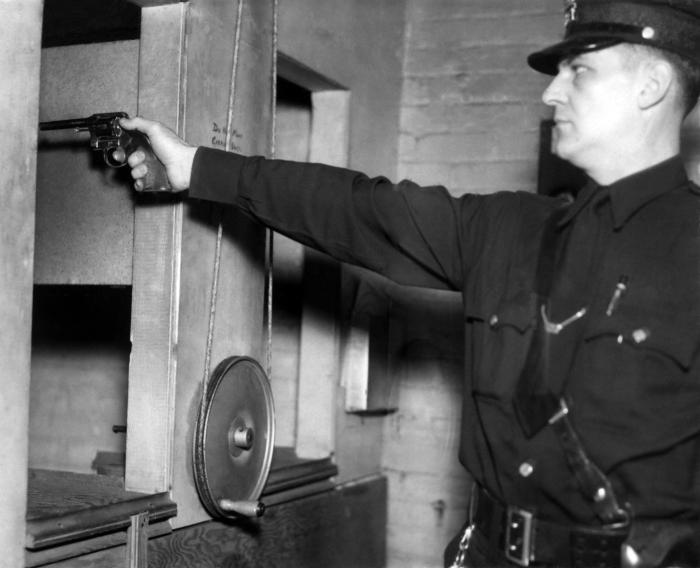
This historical photograph was provided by the Center for Disease Control's (CDC), National Institute for Occupational Safety and Health (NIOSH). The image depicted a policeman who was firing lead bullets inside an indoor firing range. In this situation, the officer was exposed to lead dust from the bullets and shell casings due to the enclosed nature of the environment. This photograph appeared in the December, 1951, issue of 'Industrial Health Monthly'.Workers can be exposed to lead through inhalation of fumes and dusts, as well as through ingestion as a result of lead-contaminated hands, food, drinks, cosmetics, tobacco products, and clothing. Furthermore, workers can take lead home on their clothes, skin, hair, tools, and in their vehicles, potentially exposing their families to this element's harmful health effects.